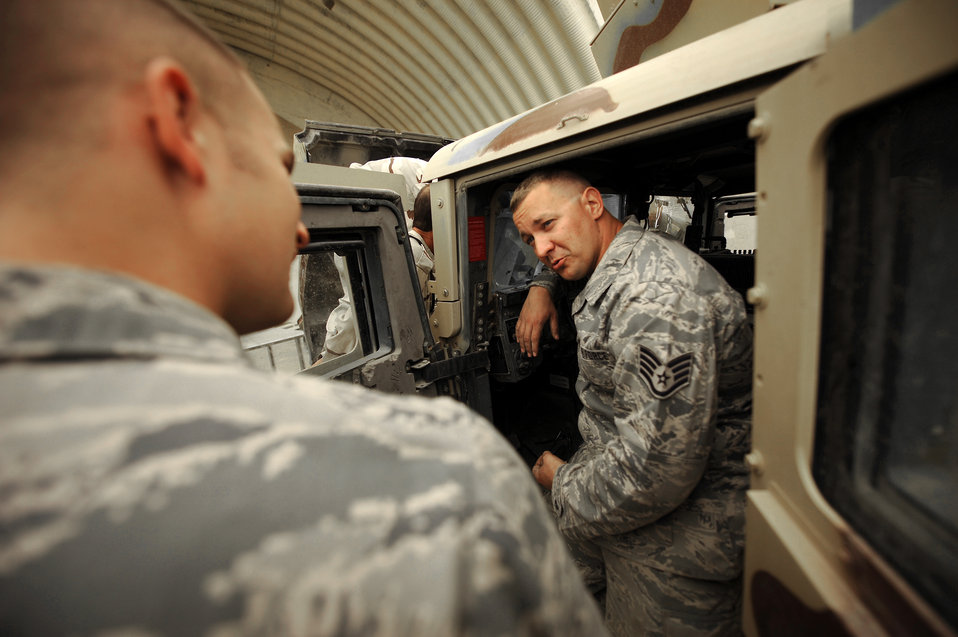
Logistics Airmen play crucial dual-role before Kirkuk transition

Staff Sgt. Jedidiah Brown talks with his coworker, Airman 1st Class Joshua Guisasola, about humvee maintenance tips while training Iraqi air force airmen April 6, 2011, at Kirkuk Regional Air Base, Iraq. Sergeant Brown is deployed from F.E. Warren Air Force Base, Wyo., and calls Troy, Pa., his hometown. Airman Guisasola is deployed from Luke Air Force Base, Ariz. Sergeant Brown is a 321st Expeditionary Logistics Readiness Squadron vehicle maintainer.